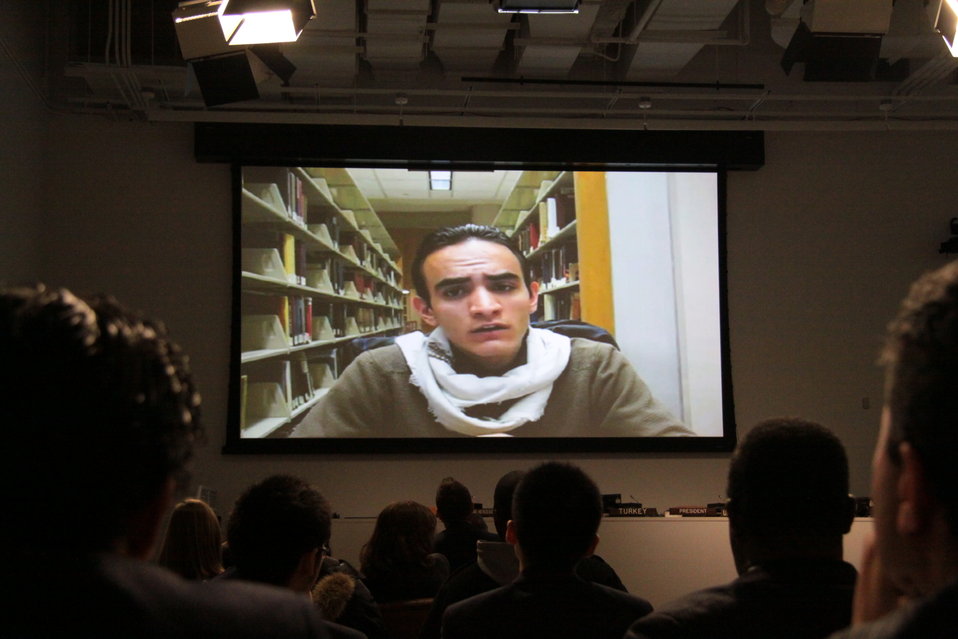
Voices of a New Generation: Young People Set the Agenda at the UN Security Council

Individuals watch a video of a young man expressing his opinion of what should be on the agenda of the UN Security Council during the special event, Voices of a New Generation, at the United Nations in New York, New York, on December 21, 2010.